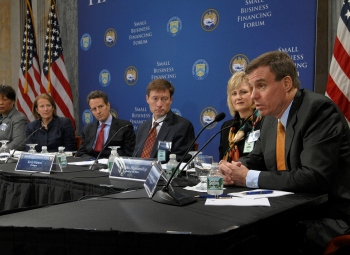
Treasury and SBA Host a Small Business Financing Forum

Senator Mark Warner (D-VA) joins Secretary Geithner and Administrator Mills for the second panel, the Lender’s Perspective.